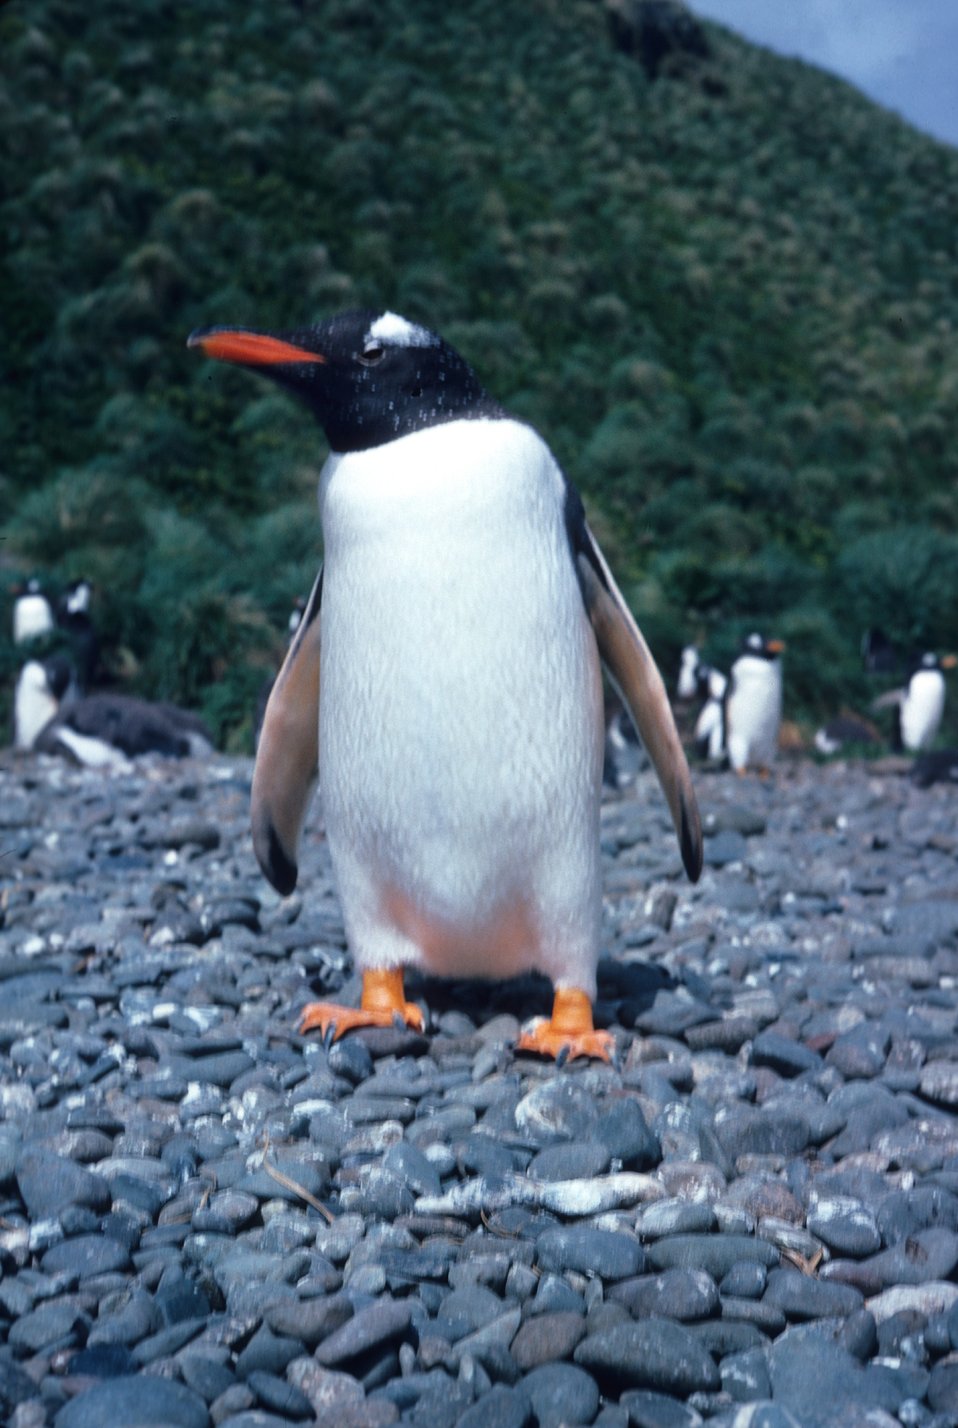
Gentoo Penguin.